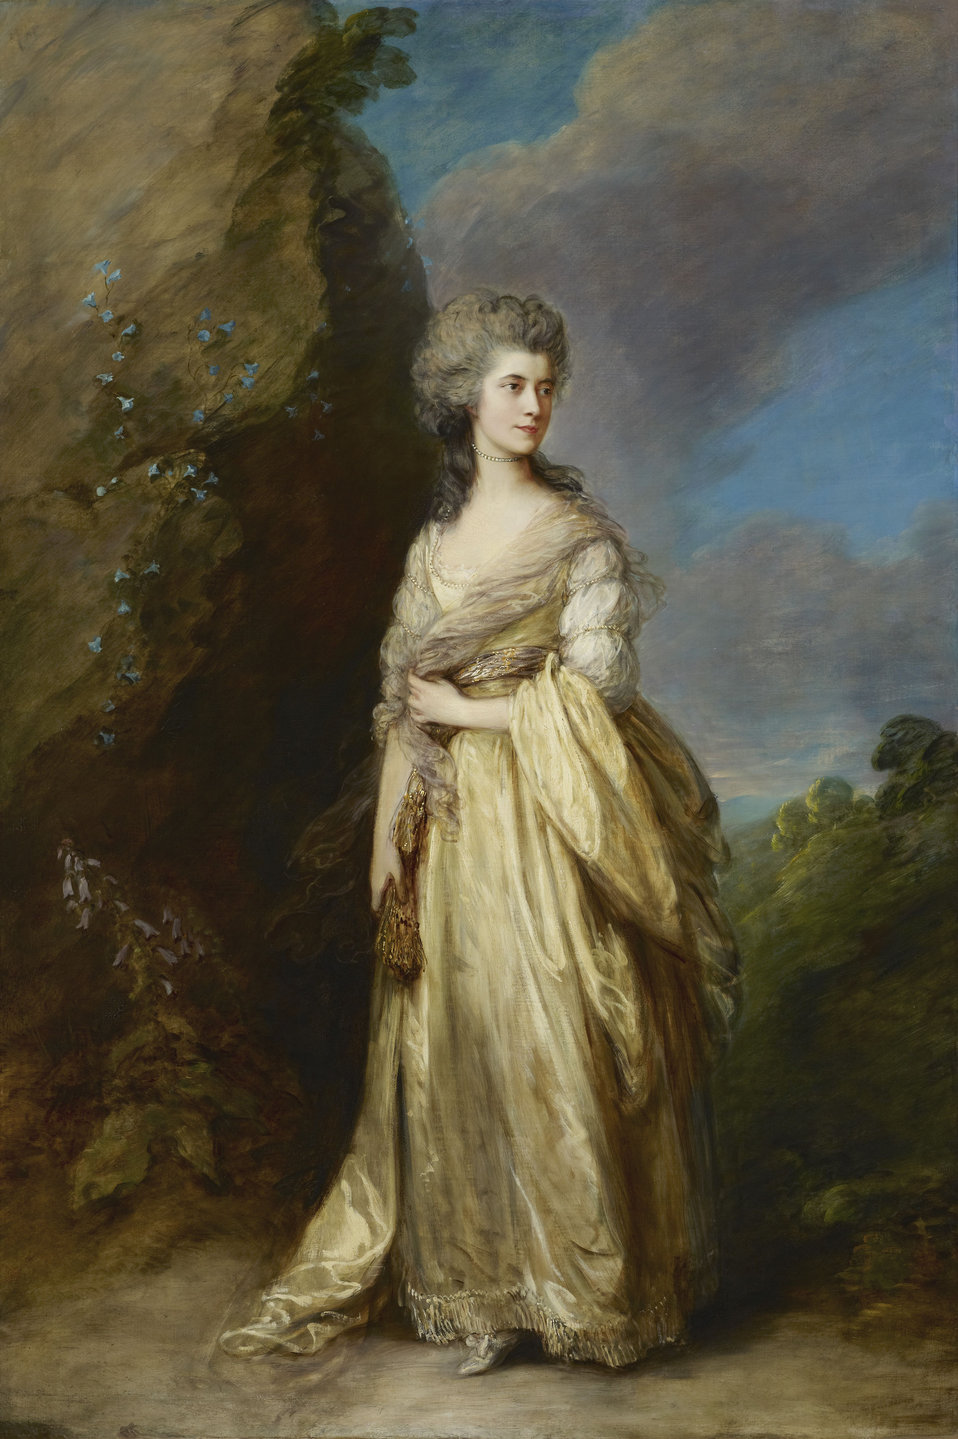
Mrs. Peter William Baker - Gainsborough 1781